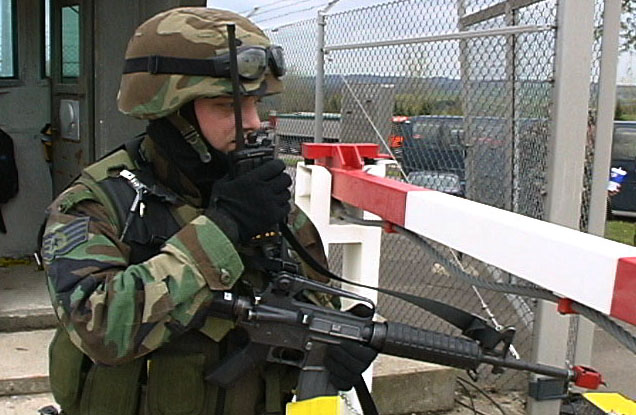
Unidentified threat

SPANGDAHLEM AIR BASE, Germany -- Staff Sgt. Travis Humphries calls for back up after spotting an unidentified person here April 20 during exercise Harley Saber. Sergeant Humphries is a security forces Airman with the 52nd Security Forces Squadron.